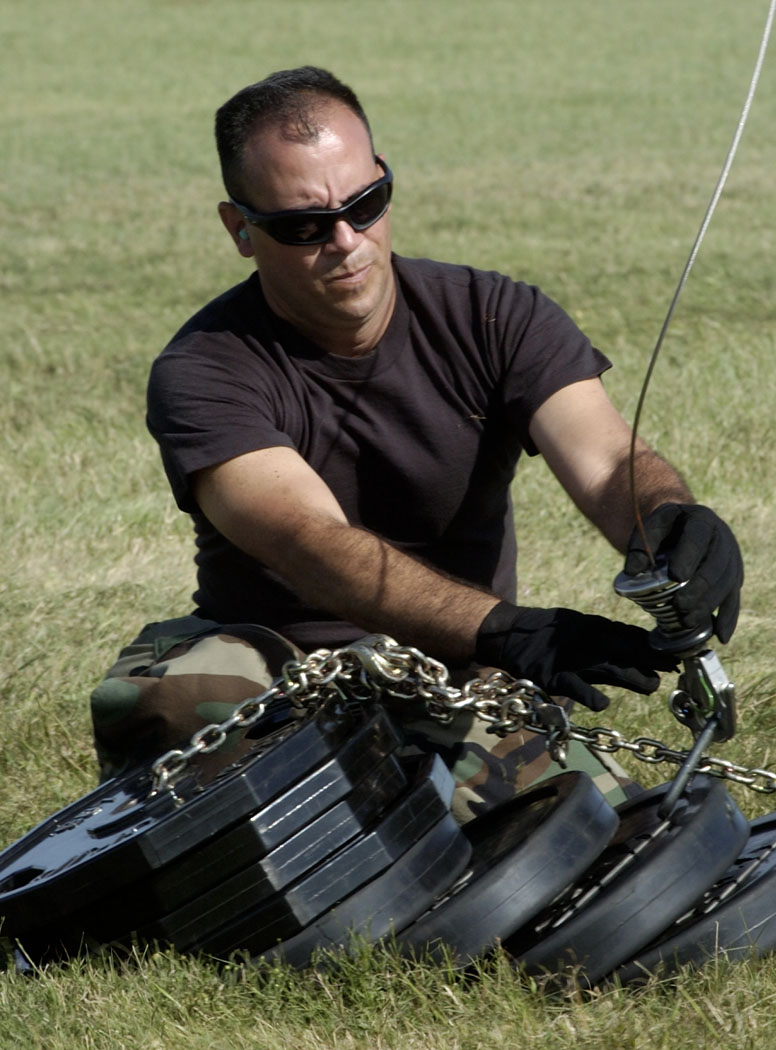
Search and rescue missions underway

RANDOLPH AIR FORCE BASE, Texas -- Senior Airman Ronald Arroyo attaches a 600-pound weight to the rescue cable of an HH-60 Pave Hawk for an operational test prior to its departure on a search and rescue mission over southern Texas Sept. 24. Airman Arroyo is a crew chief from the 920th Rescue Wing, Patrick Air Force Base, Fla.